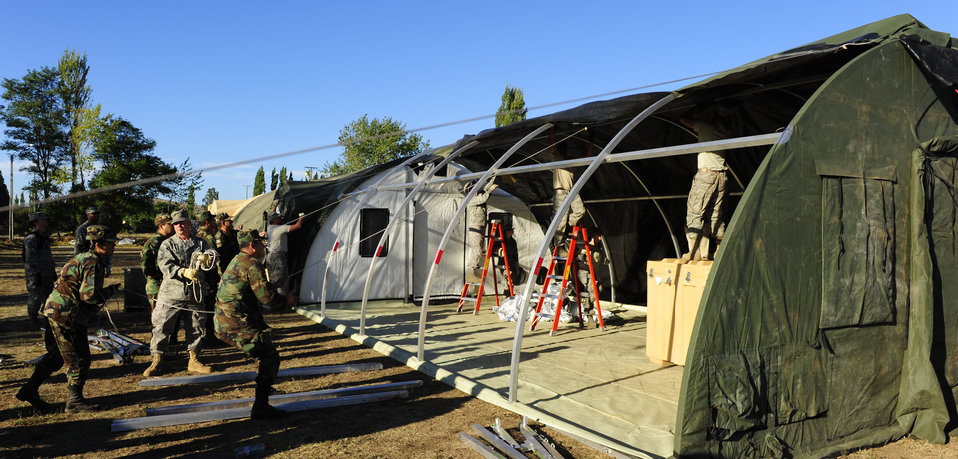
Airmen expand local hospital to meet Chileans’ medical needs

Airmen from an Air Force Expeditionary Medical Support team along with members of the Chilean army pull the roof over a mobile hospital March 12, in Angol, Chile. The EMEDS team is adding an additional operating room and three patient wards to the facility at the request of local Chilean medical officials.